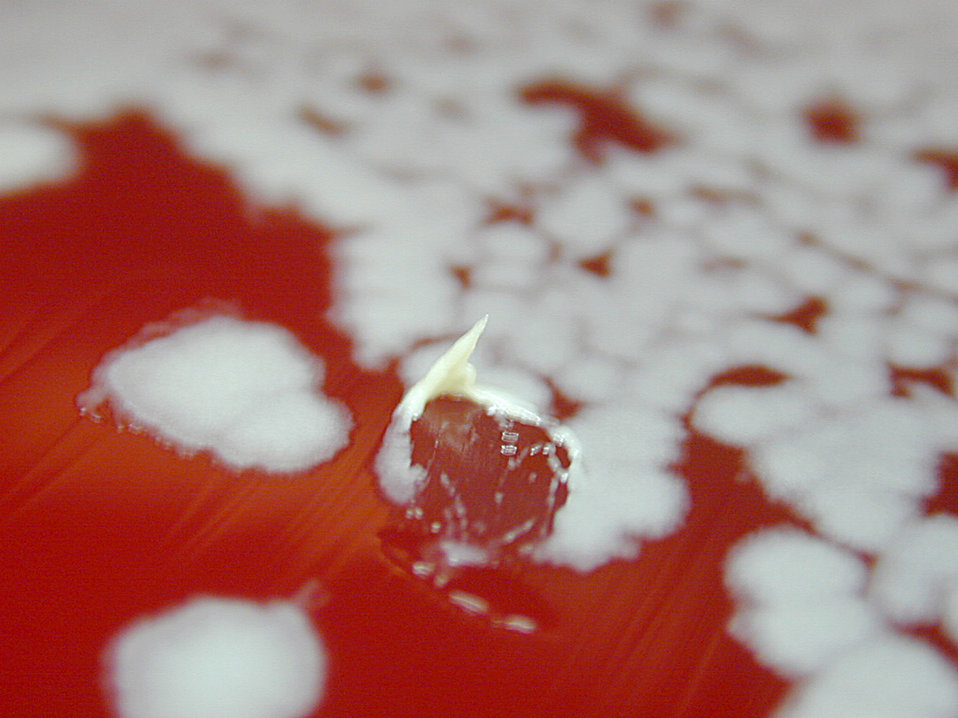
Bacillus anthracis tenacity positive on sheep blood agar.